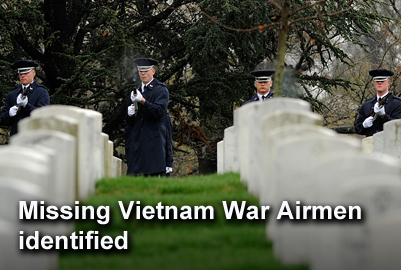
Airmen missing from Vietnam War identified

Department of Defense Prisoner of War/Missing Personnel Office announced June 11, 2010, that the remains of nine servicemembers, missing in action from the Vietnam War have been accounted for and returned to their families for burial with full military honors.